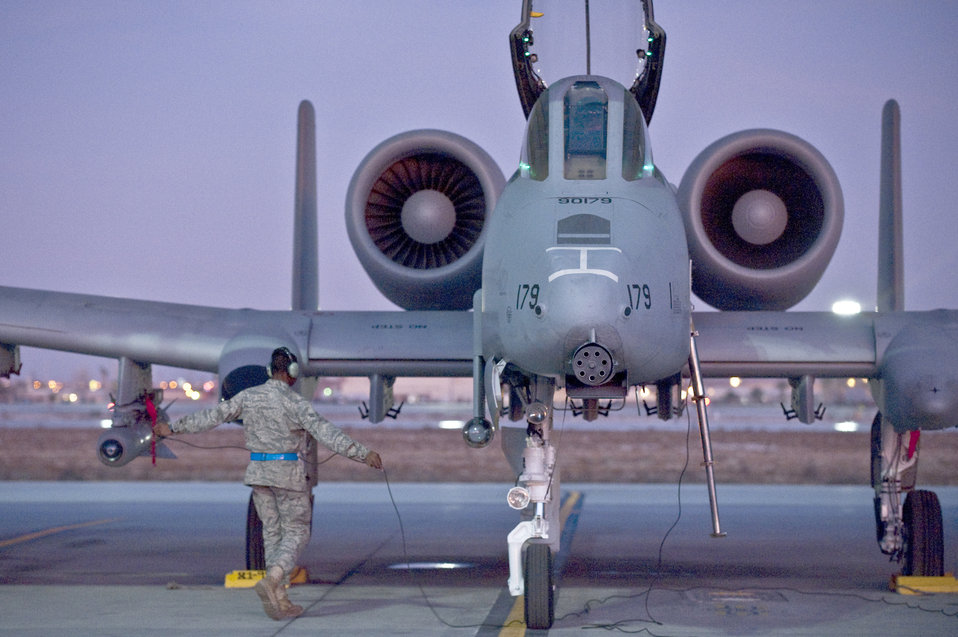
Green Flag West 11-2

Senior Airman Edwin Watkins conducts a pre-flight check on an A-10 Thunderbolt II before a training mission during the Green Flag West 11-2 exercise Dec. 10, 2010, at Nellis Air Force Base, Nev. He is a crew chief with the 23rd Aircraft Maintenance Squadron at Moody AFB, Ga.